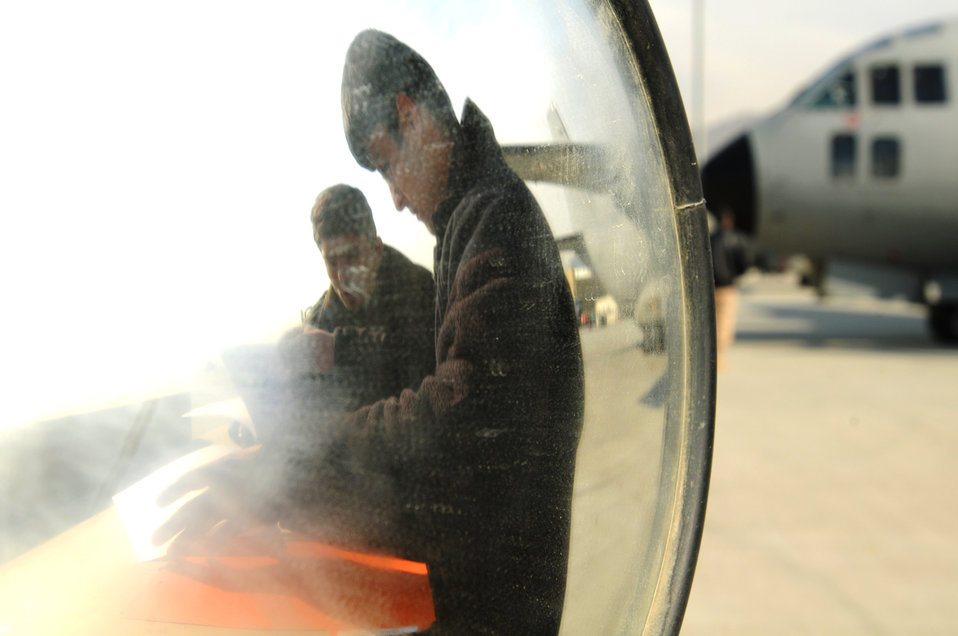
Afghan C-27 maintenance cadre begins building towards the future

Afghan air force airmen practice documenting aircraft maintenance during a training session held by the initial cadre of AAF C-27 maintenance on-the-job trainers Feb. 9, 2011, at the Afghan Air Force Base in Kabul, Afghanistan.